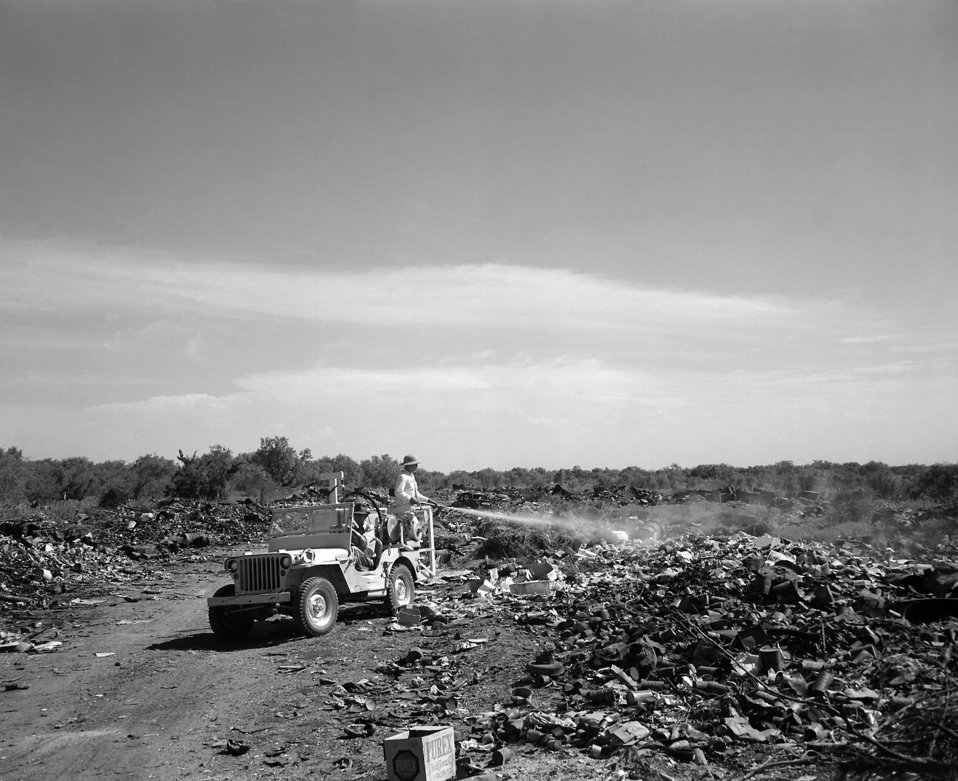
Man standing in the back of a jeep spraying a fly-breeding city dump in Edinburg, Texas.